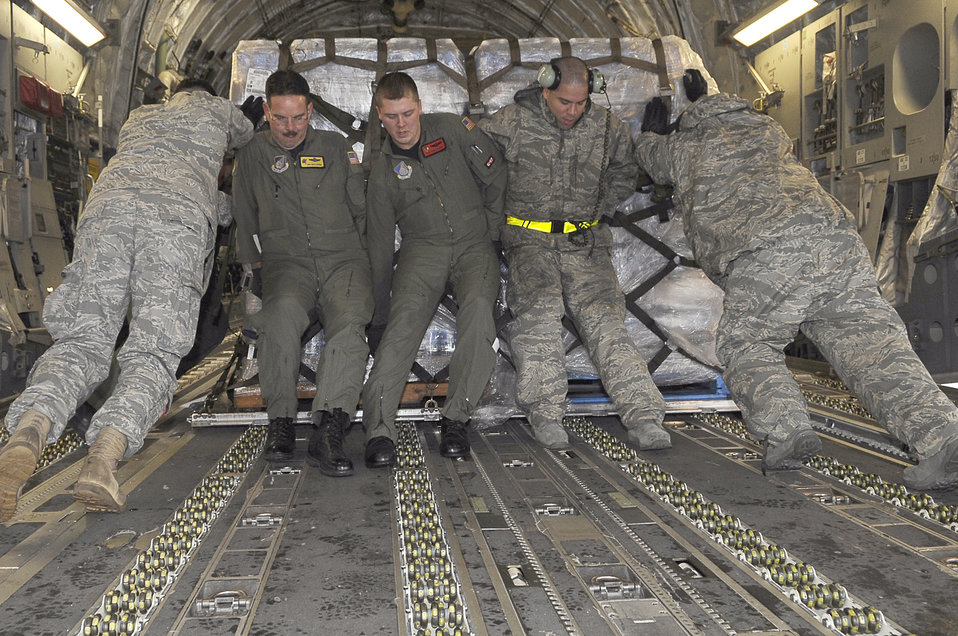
Airmen at Yokota deliver water in support of Japan relief efforts

Airmen load a pallet of water onto a C-17 Globemaster III March 21, 2011, at Yokota Air Base, Japan. Crews unloaded the water and other relief items at Sendai Airport as American forces worked with their Japanese counterparts to aid the people of Japan in the aftermath of an earthquake that hit Japan March 11.